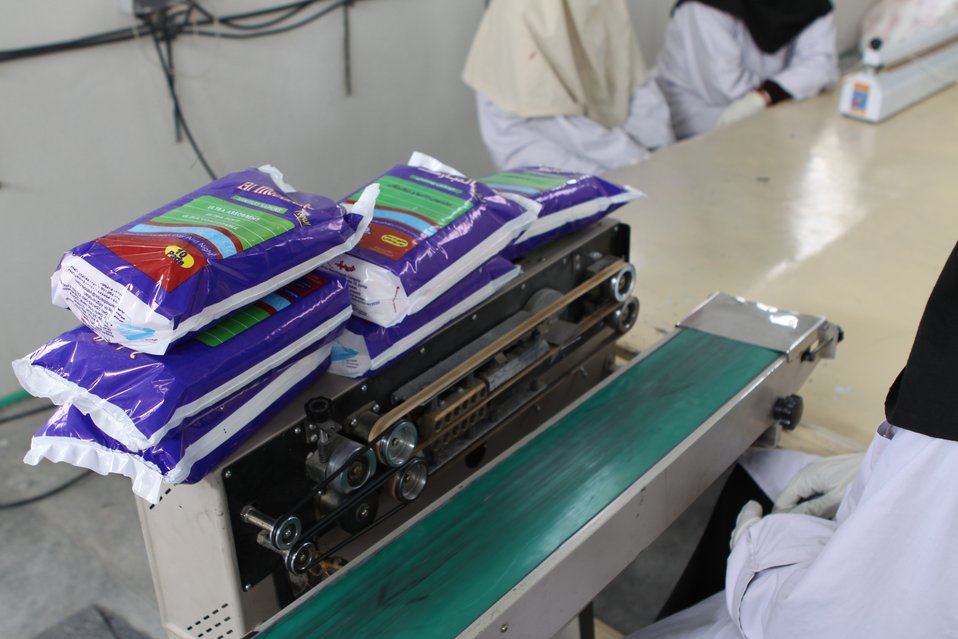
100525 Hirat Marble Conference 811